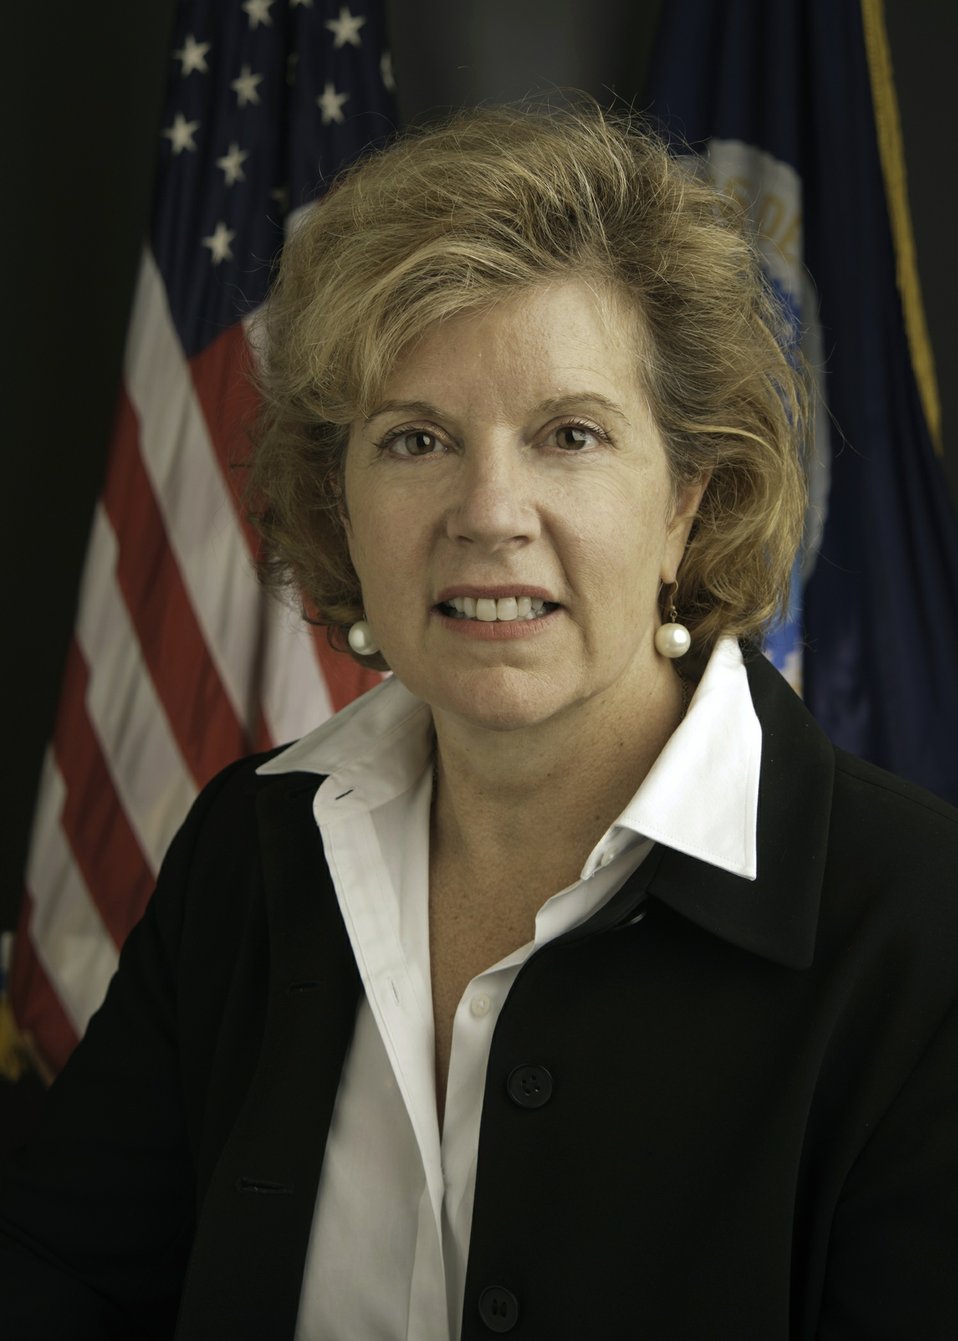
20121002-RD-RBN-1415 Rural Development (RD) Rural Business Service (RBS) Acting Administrator Lillian Salerno

U.S. Department of Agriculture (USDA) Rural Development (RD) Rural Business Service (RBS) Acting Administrator Lillian Salerno.